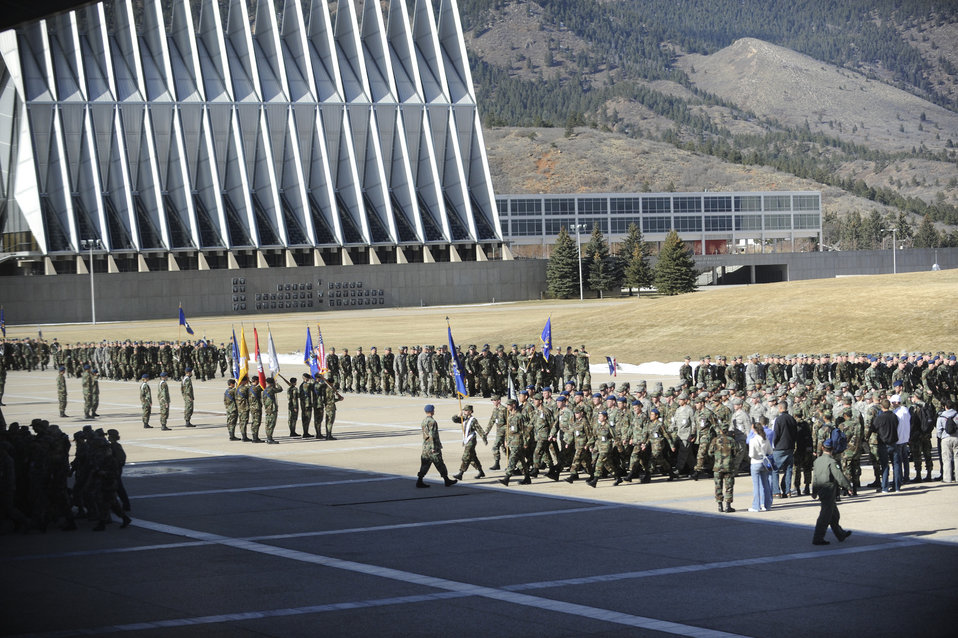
U.S.Air Force Academy Mitchell Hall Cadet Dining Facility

Cadets march past the chapel at the U.S. Air Force Academy in Colorado Springs, Colo., Jan. 23 on their way to Mitchell Hall Cadet Dining Facility. The dining facility feeds approximately 4450 cadets and sits on 1.75 acres.